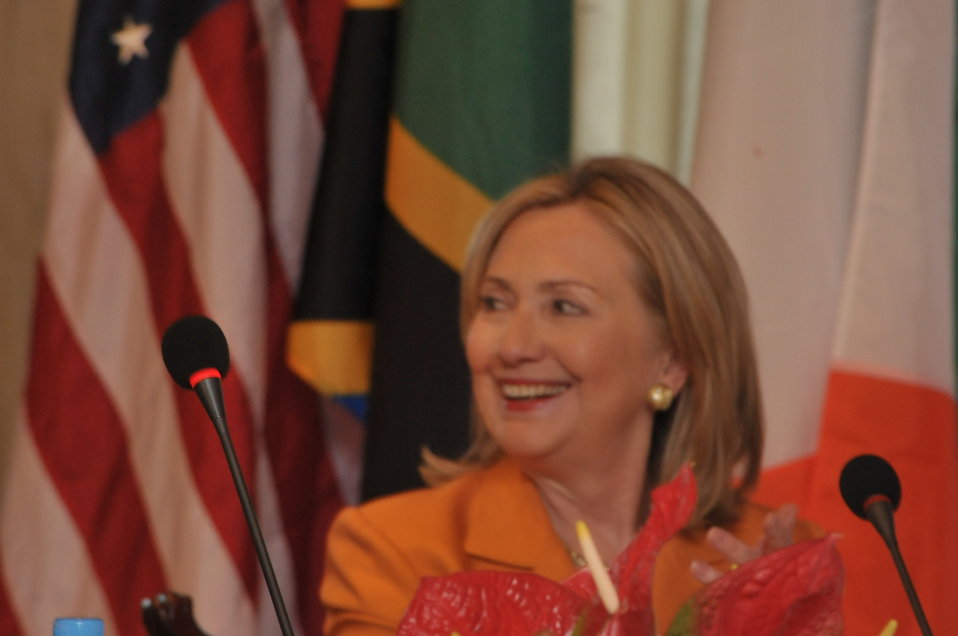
Secretary Clinton Meets With Tanzanian Prime Minister Pinda and Irish Deputy Prime Minister Gilmore

U.S. Secretary of State Hillary Rodham Clinton meets with Tanzanian Prime Minster Mizengo Pinda and Irish Deputy Prime Minister Tanaiste Eamon Gilmore, at the High-Level Meeting on Nutrition and 1,000 Days Initiative in Dar es Salaam, Tanzania, on June 12, 2011.